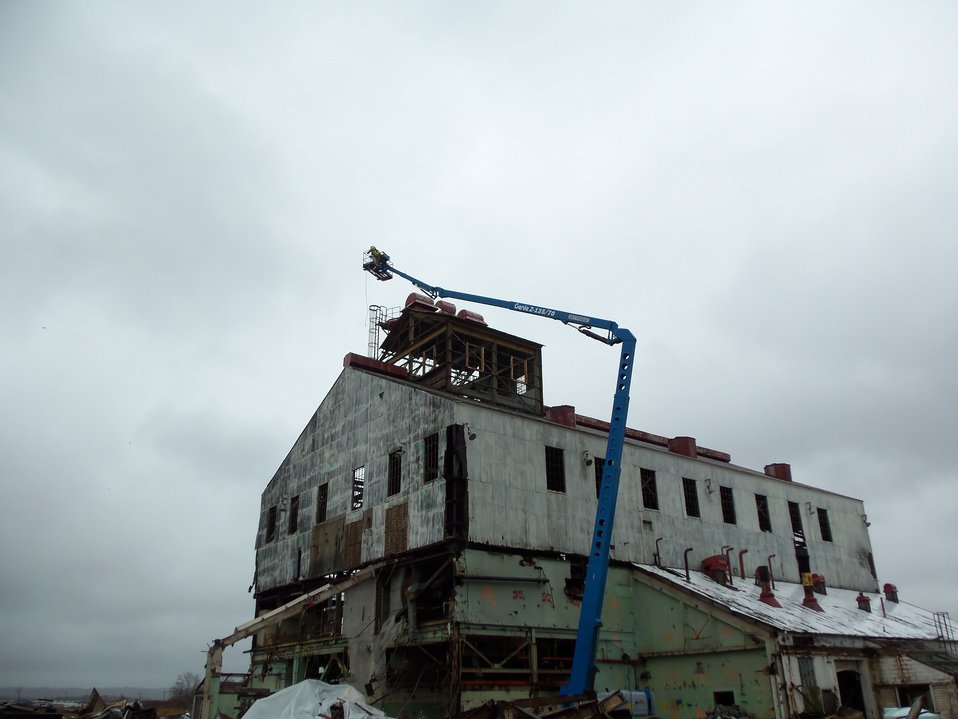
BLDG 401 ASBESTOS REMOVAL AND FROM ROOF.

Activities from the Niagara Falls Storage Site, which is associated with the former Lake Ontario Ordnance Works. Formerly Utilized Sites Remedial Action Program (FUSRAP), a program initiated in 1974 to identify, investigate and clean up or control sites that were part of the Nation's early atomic energy and weapons program. Activities at the sites that are eligible for FUSRAP were conducted by Manhattan Engineer District (MED) or the Atomic Energy Commission (AEC), both predecessors of the Department of Energy (DOE). The U.S. Army Corps of Engineers was assigned management of FUSRAP by Congress in 1997.